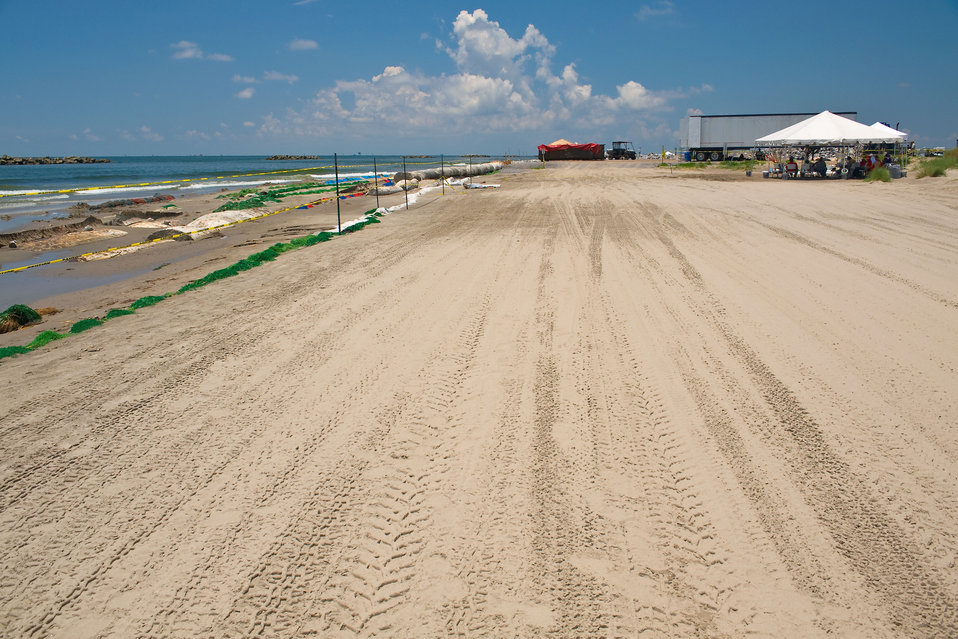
June 1, Lafourche Beach cleanup site

Lafourche, La.